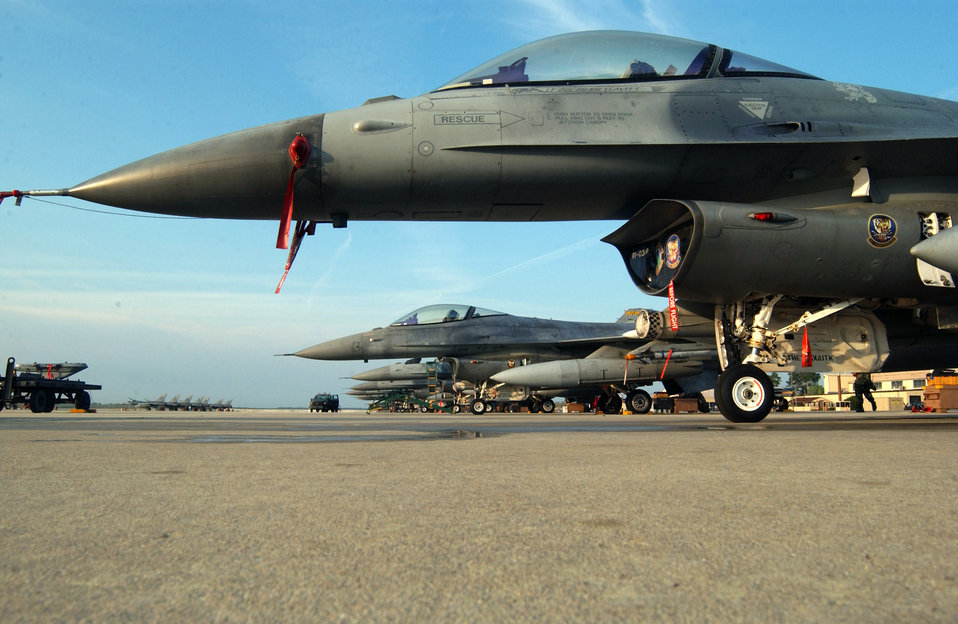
Prepare for launch

F-16 Fighting Falcons from the 20th Fighter Wing are generated and readied for take off in support of an operational readiness exercise March 27 at Shaw Air Force Base, S.C. Exercises help prepare Airmen for future deployments.